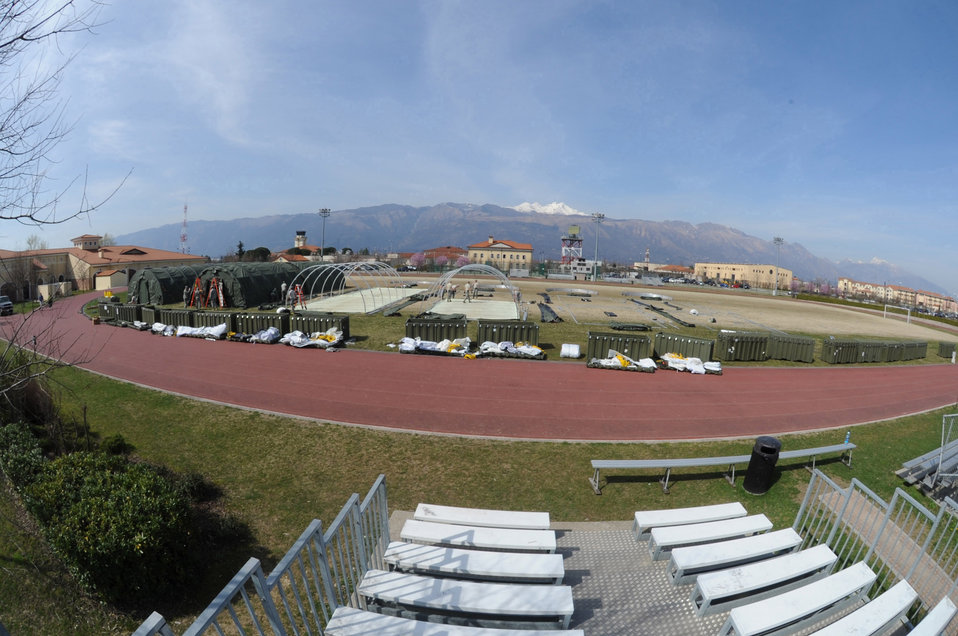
Setting up a tent city

Airmen from multiple U.S. Air Forces in Europe civil engineer squadrons assemble tents March 22, 2011, at Aviano Air Base, Italy, to house contingency personnel arriving there in support of Operation Odyssey Dawn.